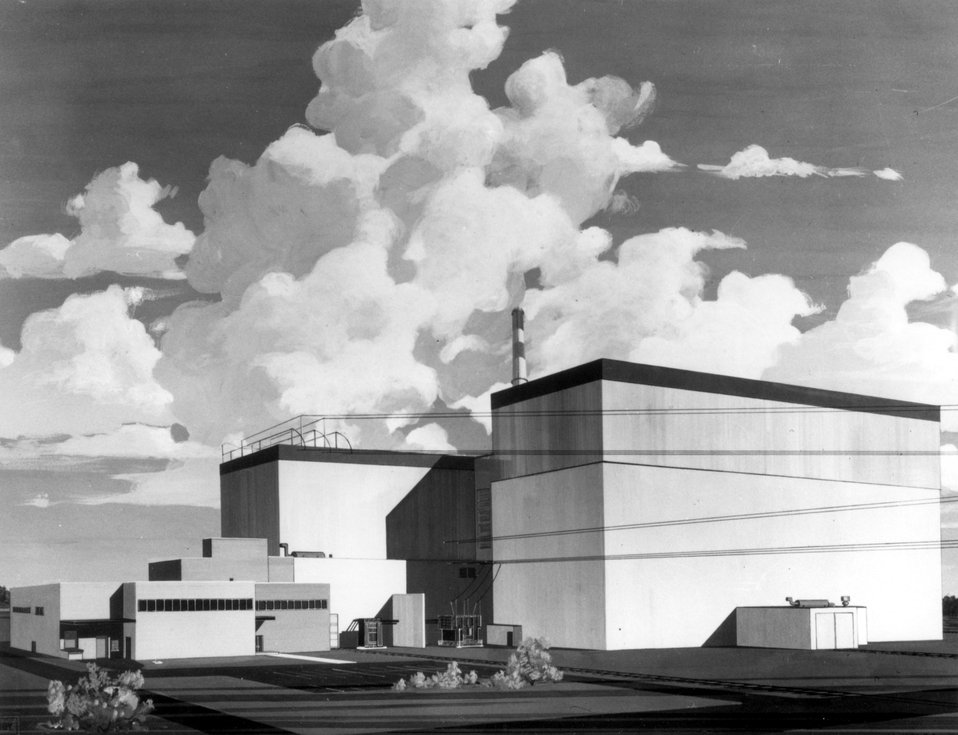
Commonwealth Edison Company's Quad-Cities nuclear power station as seen by an artist's rendering.